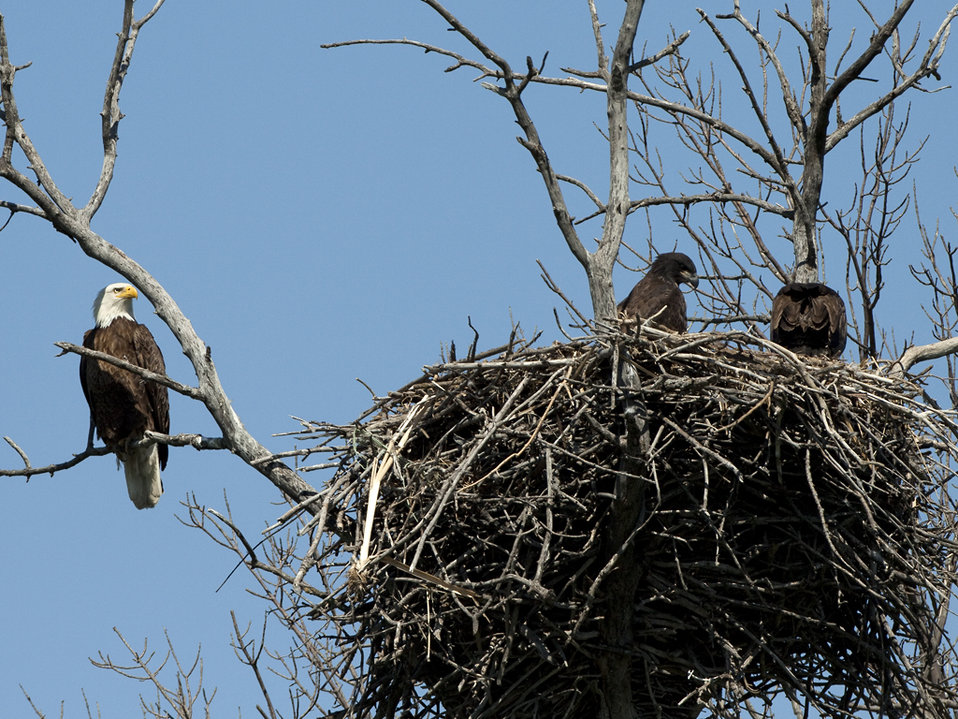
Productive Bald Eagle Nest

Monitored Bald Eagle nest in Sanborn County S.D.